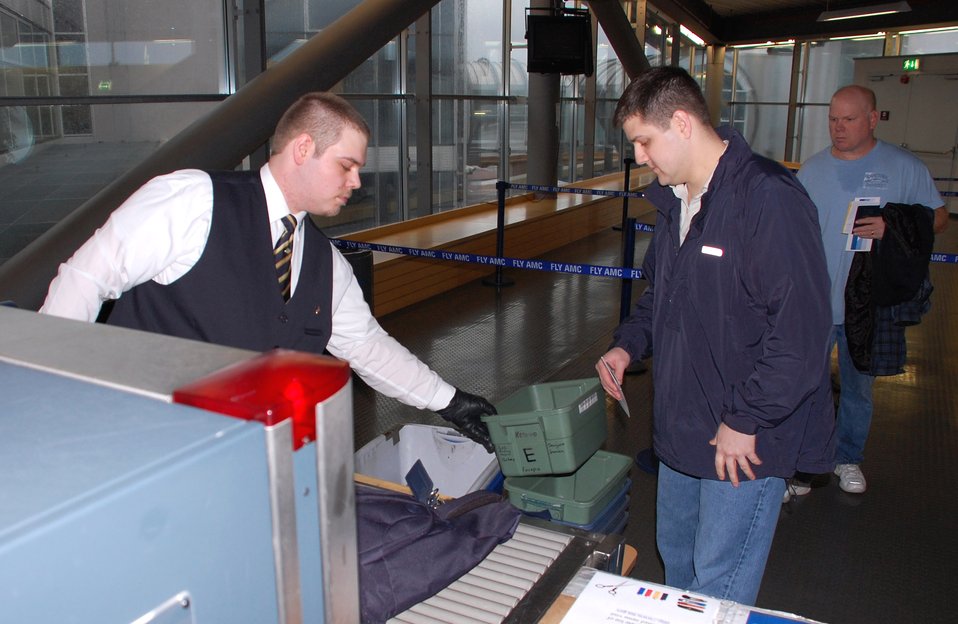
Ramstein passenger terminal streamlines operation

A passenger empties his pockets on his way through a newly located security checkpoint at the Ramstein Passenger Terminal Jan. 18 at Ramstein Air Base, Germany. The metal detectors and carry-on baggage screening devices used to be at the front door of the terminal that caused long waits. The change is part of an Air Force Smart Operations for the 21st century initiative.